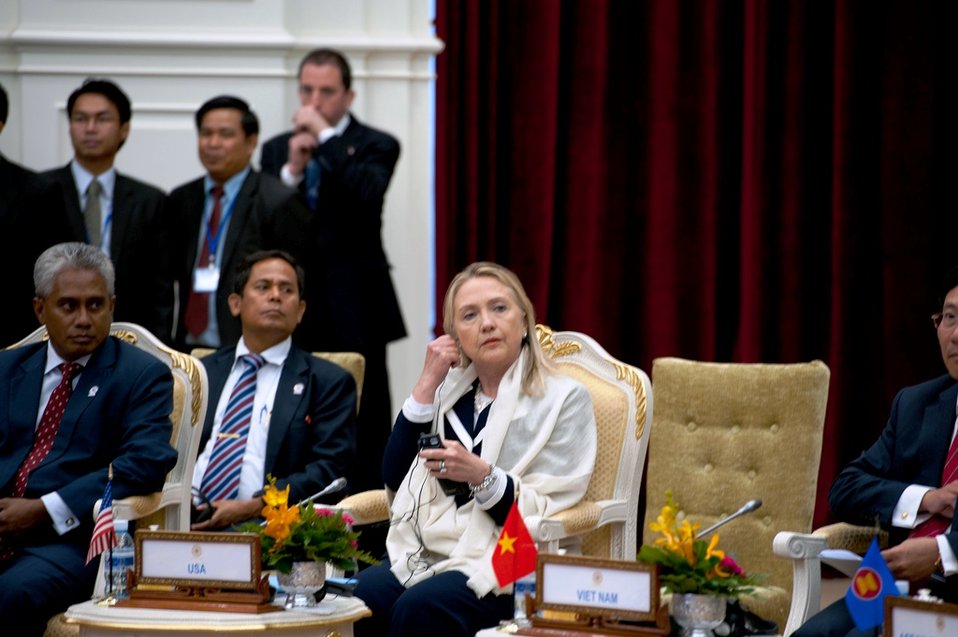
Secretary Clinton at the ASEAN Regional Forum Retreat

U.S. Secretary of State Hillary Rodham Clinton participates in the 19th ASEAN Regional Forum Retreat, in Phnom Penh, Cambodia, on July 12, 2012.